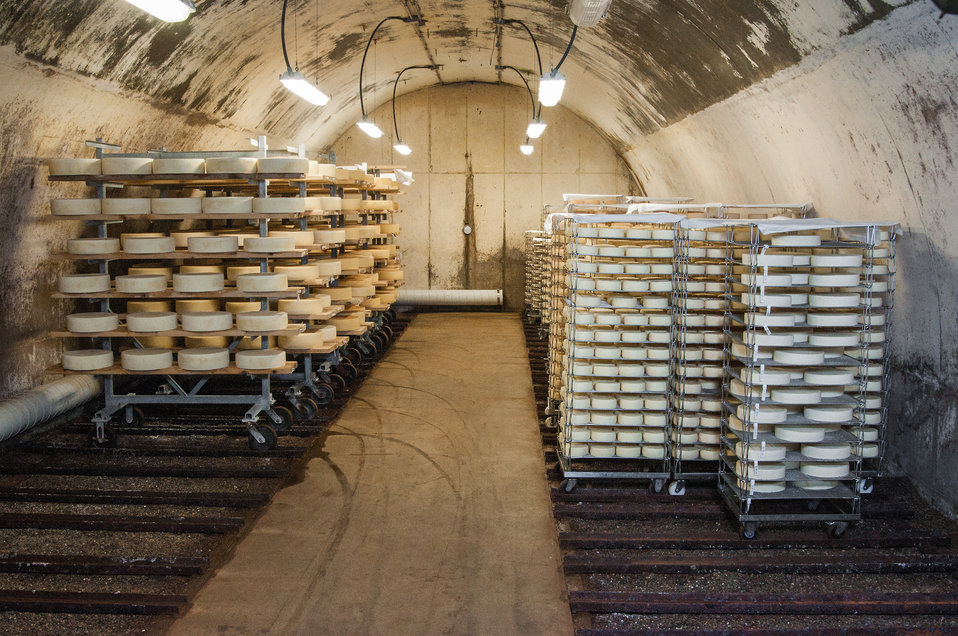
One of the seven aging caves at The Cellars at Jasper Hill in Greensboro, VT. Jasper Hill provides aging expertise, distribution and marketing services for their own and local cheese makers. The Cellars at Jasper Hill an innovative 22,000 square foot underground facility consisting of seven ageing caves received a U.S. Department of Agriculture (USDA) Rural Development (RD) Business and Industry Guaranteed (BIG) Loan. This loan was used to construct state-of-the-art artesian cheese aging cave facility to support expanded on-farm value-added cheese production as well as contract aging for other local cheese makers so they may access the growing market for artisan cheese nationwide on Sep. 19, 2013.